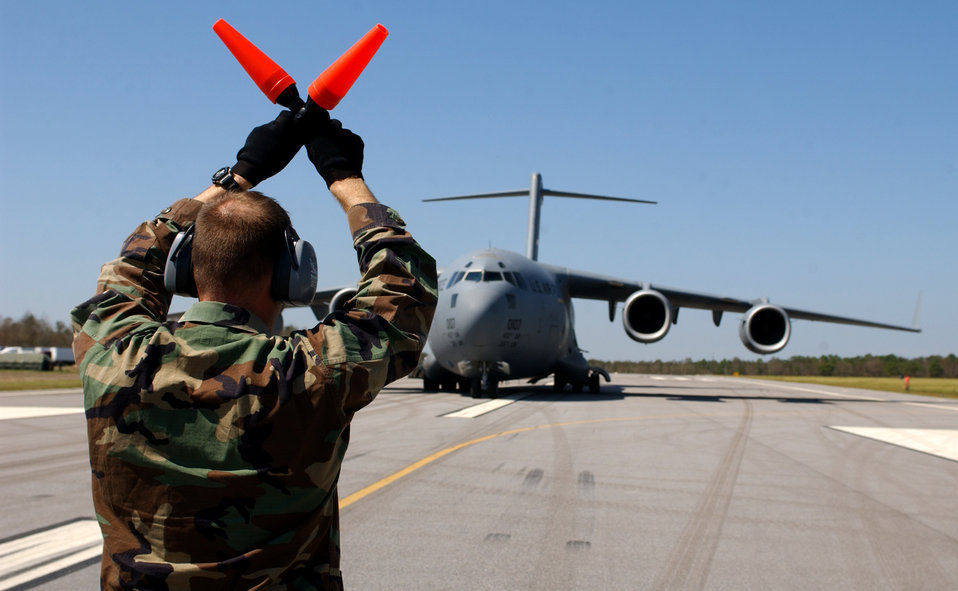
Food to go

CHARLESTON AIR FORCE BASE, S.C. -- First Lt. Michael Thompson taxies a C-17 Globemaster from here Sept. 19. The C-17 is loaded with Meals-Ready-to-Eat that will be handed out to the local community affected by Hurricane Ivan at a high school in Pensacola, Fla. Lieutenant Thompson is assigned to the 821st Air Mobility Squadron, McGuire Air Force Base, N.J.